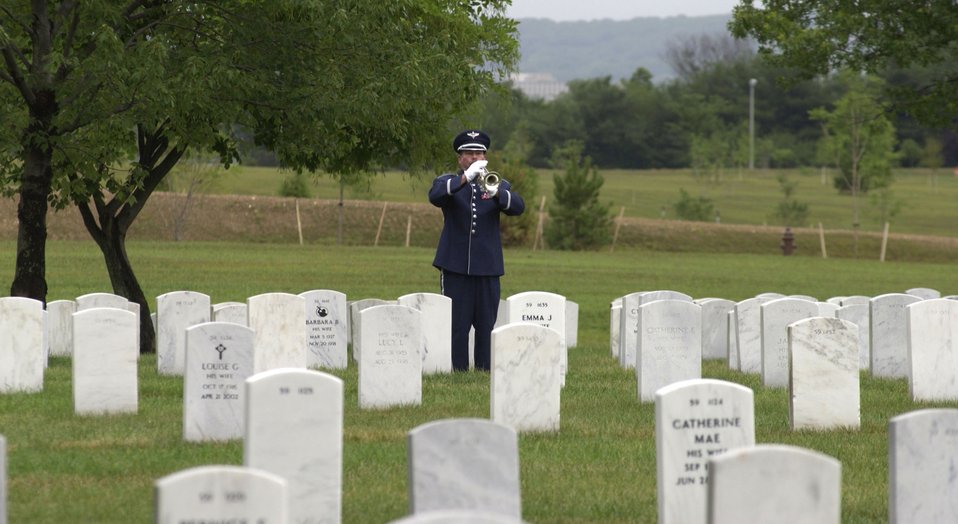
Khobar Towers 10th Anniversary

Master Sgt. Robert Connolly plays